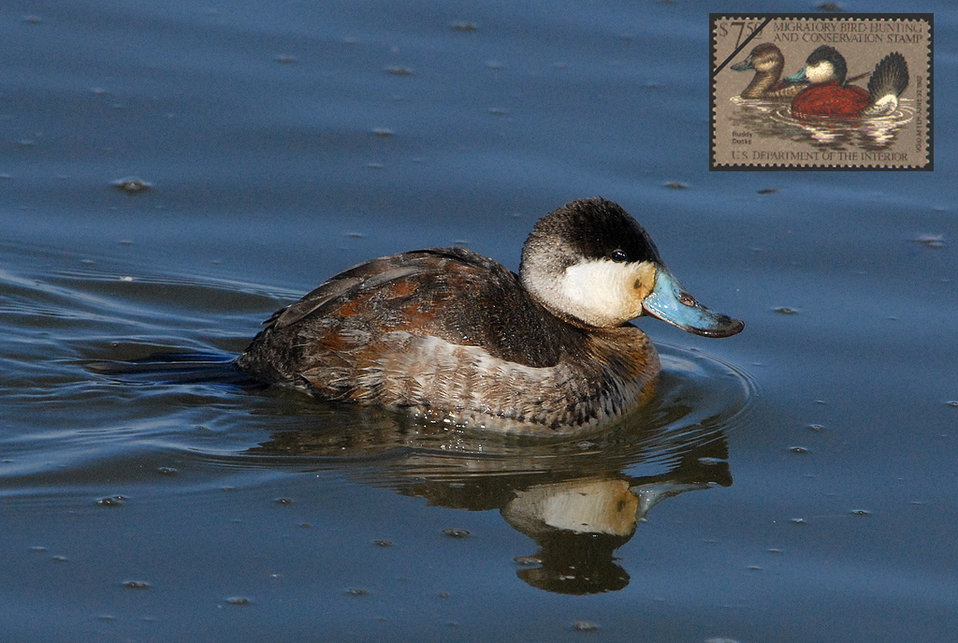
Ruddy Duck (Oxyura jamaicensis)

The Ruddy Duck, one of this year's eligible species, appeared on the Federal Duck Stamp in 1981 (inset, top right). Will a Ruddy Duck also grace the 2013-2014 stamp? Watch the 2012 Federal Duck Stamp Contest as the next image is chosen.

Ruddy Duck (Oxyura jamaicensis): They are a perky, bad tempered, stiff-tailed little duck that is such an oddball that it does not have much in common with other ducks. The males have a bright blue bill during breeding season and can fill an air sac in the neck like a toy balloon. The hen lays the largest eggs of all ducks in proportion to their body size and usually raises 2 broods in a single season. During courtship the males act more like a tom turkey by puffing up its chest and snapping his fantail so far forward it nearly touches his head all to impress a hen. They nest along the reeds and rushes of the northern prairies. Ruddy ducks prefer to winter along the Atlantic and Pacific coasts of the southern states.